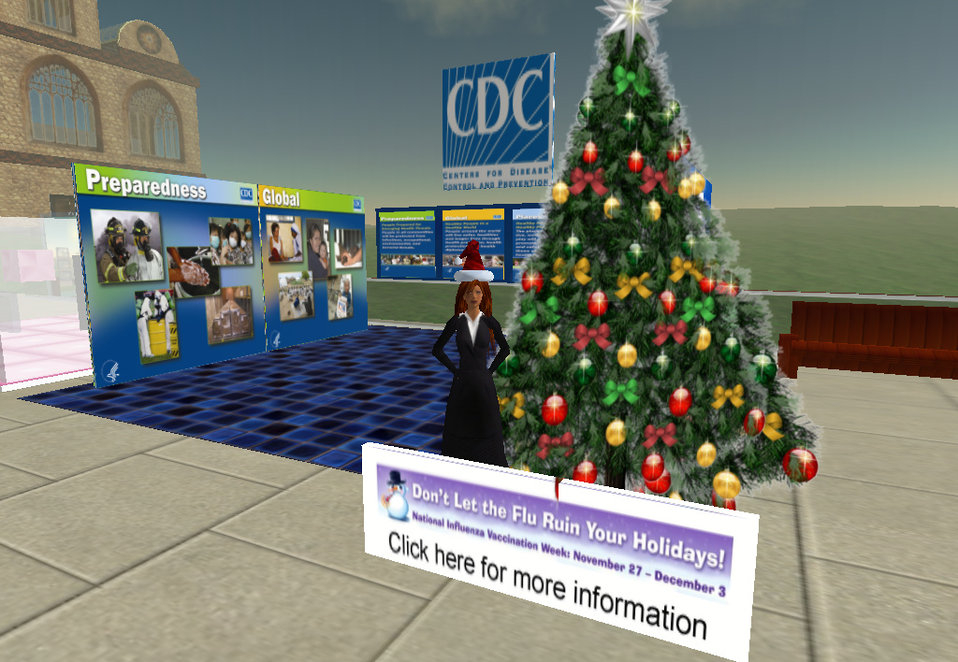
CDC's presence in the online virtual world 'Second Life' launched in August, 2006. Dr. John Anderton designed the initial CDC space using in-world, i.e., Second Life, tools, creating hyperlinks to CDC websites including the MMWR, CDC.gov homepage, CDC podcasts and the Public Health Image Library, PHIL. CDC public health posters from the first 6 decades of the CDC's existence were displayed in the 'Public Health Poster of the Week' billboard feature, which was updated weekly from August, through the end of December, 2006.